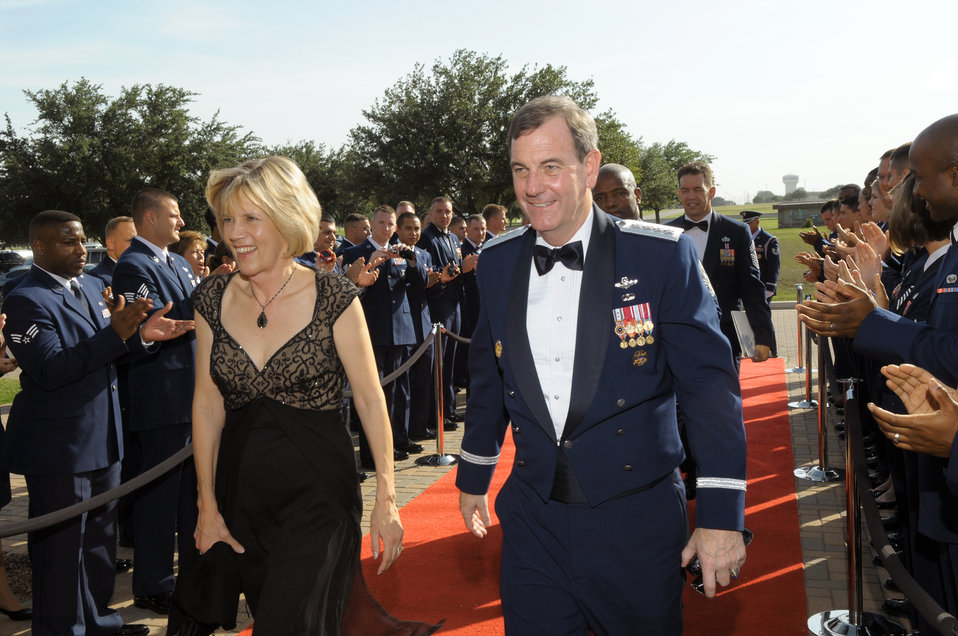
AETC inducts newest member into Order of the Sword

Gen. Stephen R. Lorenz and his wife, Leslie, arrive at the Gateway Club July 16, 2010, on Lackland Air Force Base, Texas, for his induction into the Order of the Sword. The Order of the Sword is the highest honor and tribute noncommissioned officers can bestow upon a person. General Lorenz is the Air Education and Training Command commander and is the sixth leader AETC Airmen have chosen to recognize by presenting the sword.